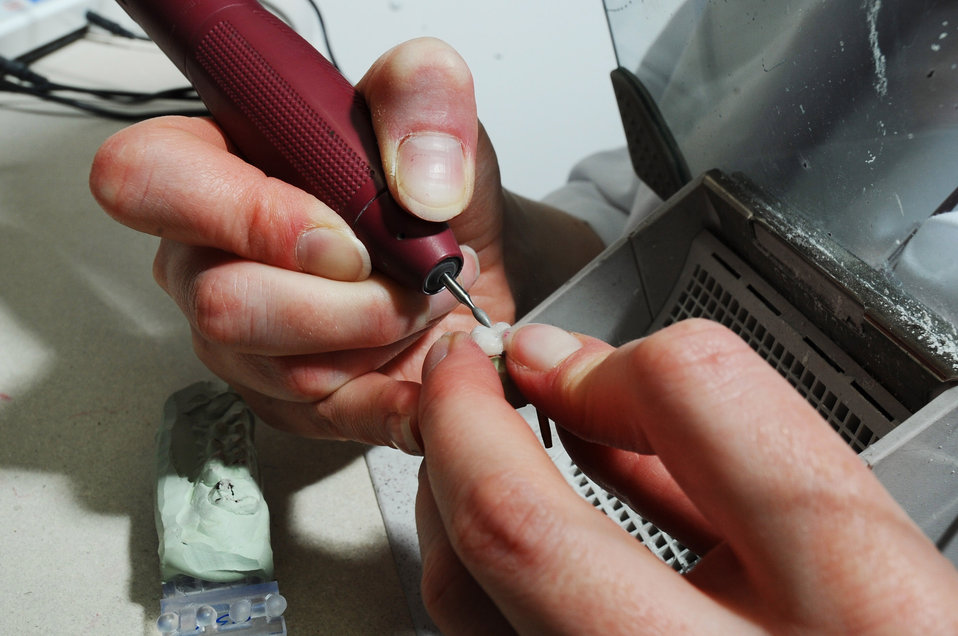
Crown me

Staff Sgt. Amy Cadavero shapes a porcelain crown using a dental drill with a diamond bur drill bit Sept. 9 at Eielson Air Force Base, Alaska. Once Sergeant Cadavero receives the impressions made from a patient's teeth, she will then make it into a cast mold to start shaping the crown so it will fit comfortably in a patient's mouth. This process can take up to a week to finish. She is a dental lab technician assigned to the 354th Medical Operations Squadron.